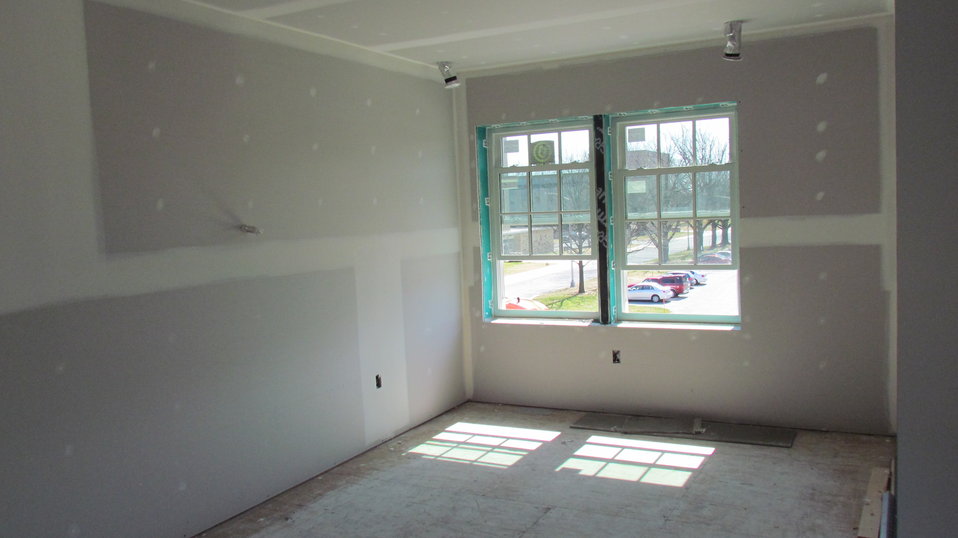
Drywall installed and compound applied to joints in the southeast bedroom located on the second story of the facility.